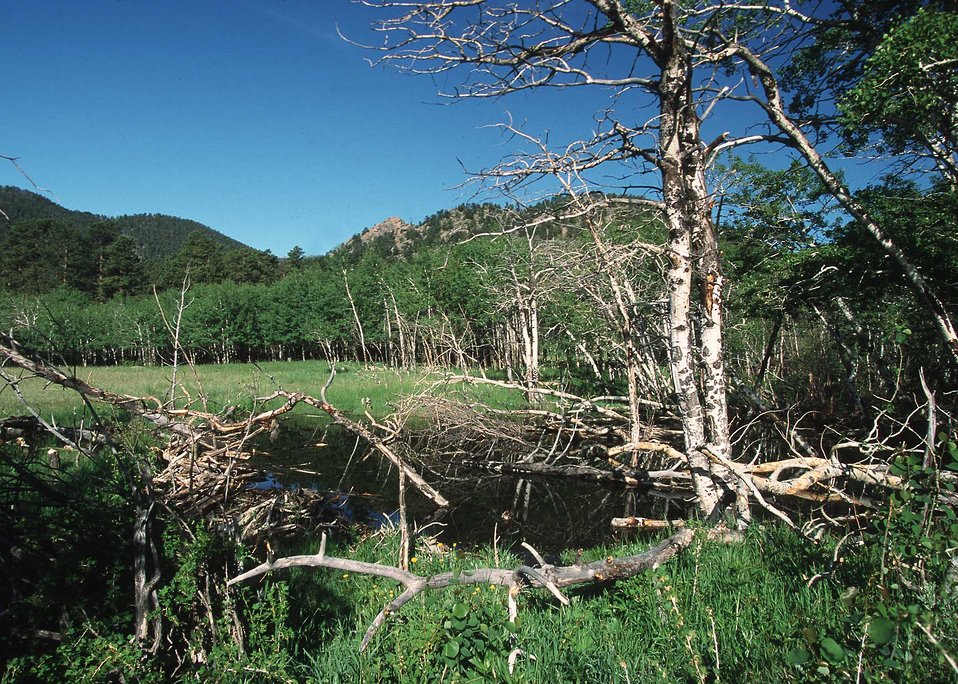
Beaver Dam on Mcgregor Ranch, near RMN.